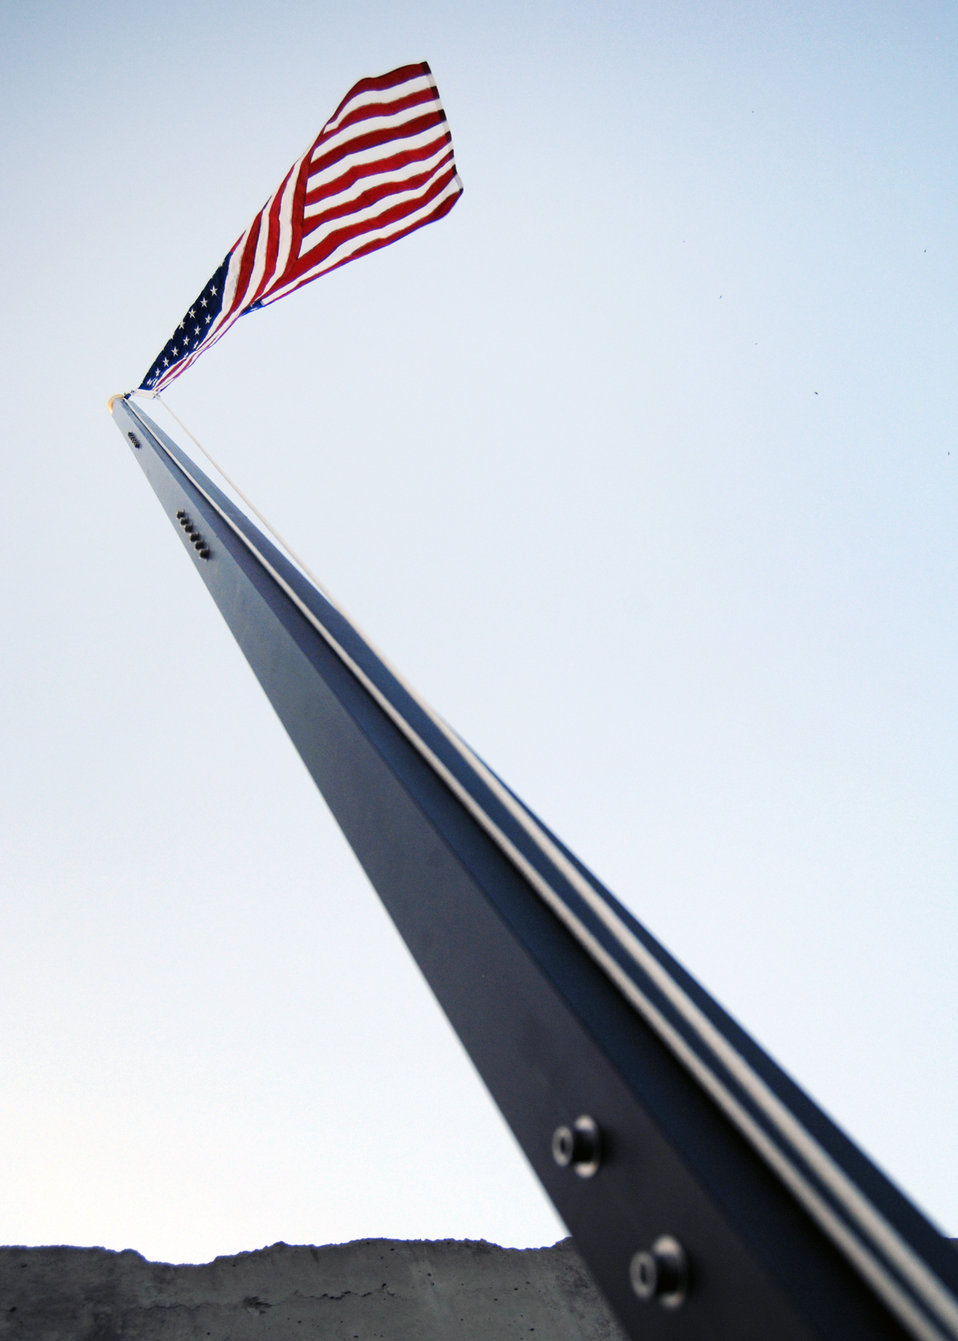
Raise the Flag

The U.S. flag flies high above the contingency aeromedical staging facility at Kandahar Airfield, Affghanistan, Aug. 4, 2012. The CASF is responsible for transporting patients in and out of Kandahar Airfield who are injured or wounded from a forward operating base, combat outpost or even more remote locations.